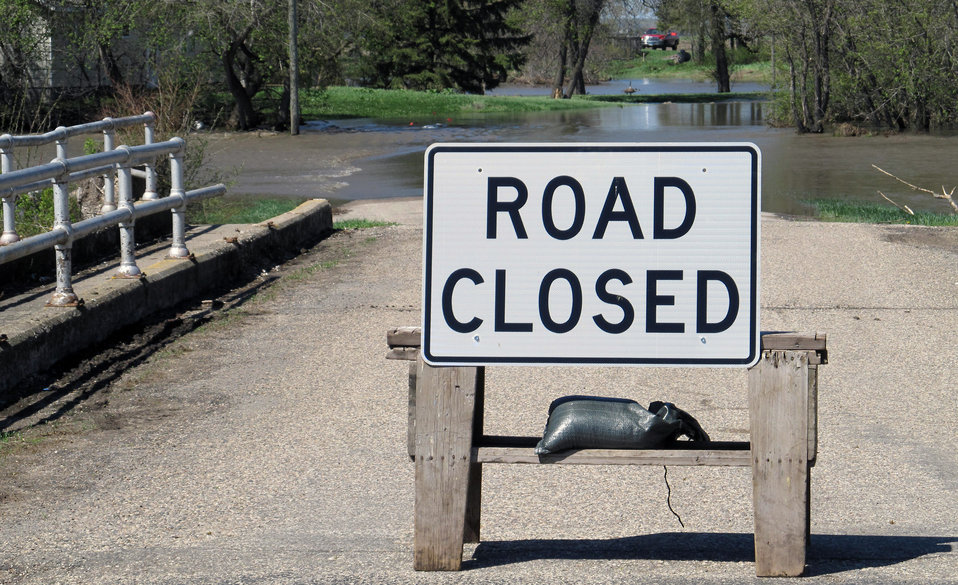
Flooding and water damage in the Park and Tongue River Watersheds located in Cavalier, Pembina and Cavalaier Counties in ND on Thursday, May 23, 2013.